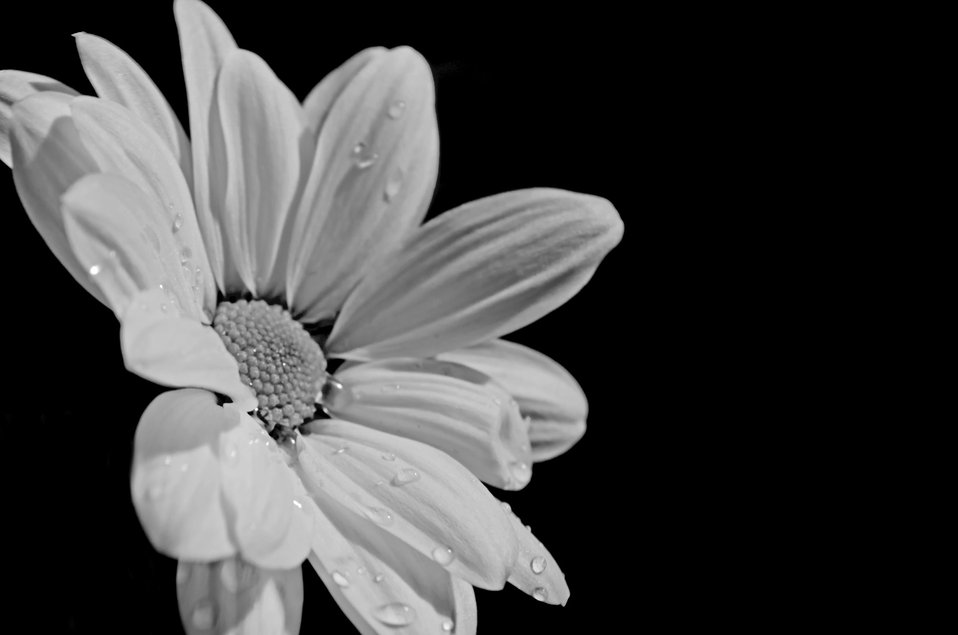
White flower on black background

White flower on the black background.